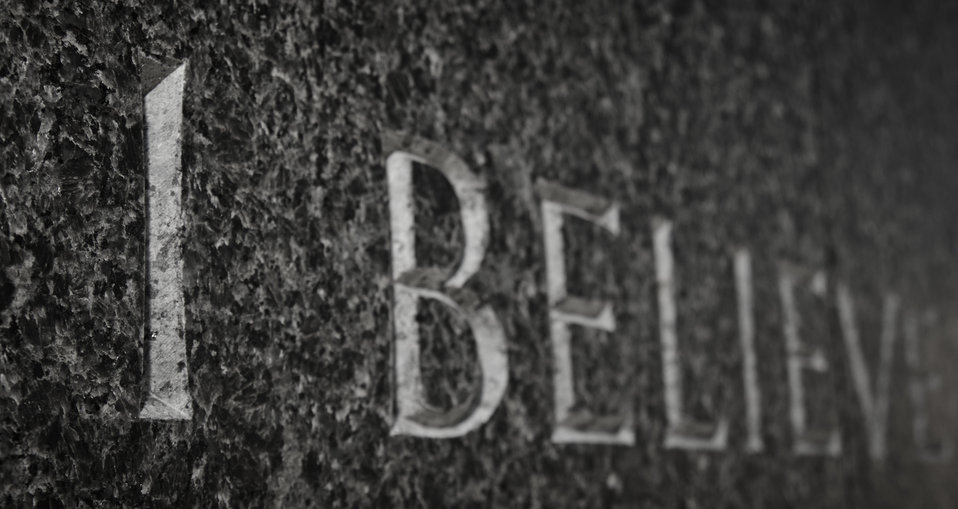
Martin Luther King, Jr. Memorial in Washington, DC, on Saturday, October 8, 2011.